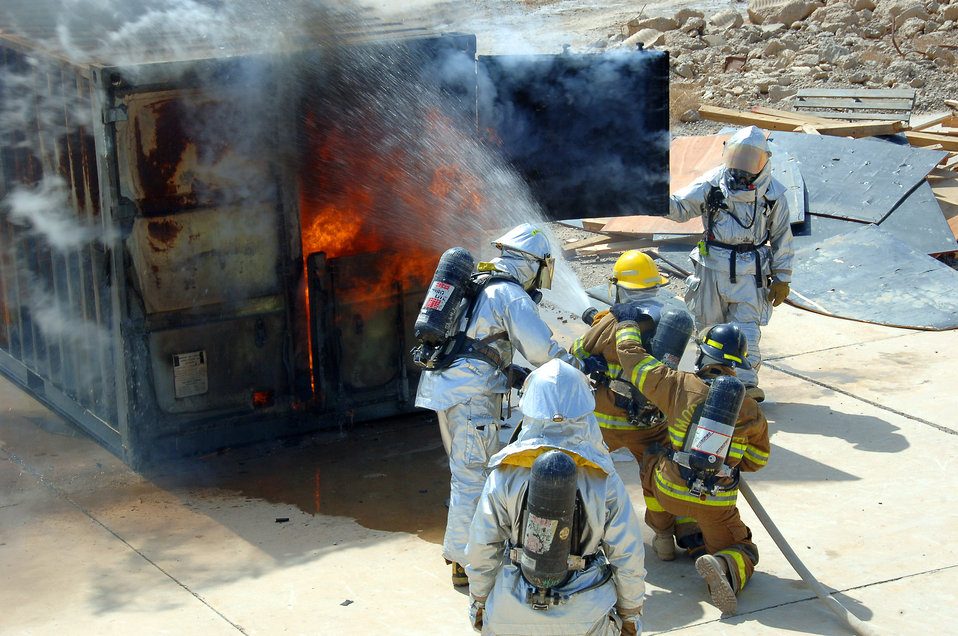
Airmen train Iraqis to save lives

Air Force firefighters from the 407th Expeditionary Civil Engineer Squadron show Iraqi firefighters, in yellow, the proper technique to attack a fire as a team March 3 at Ali Base, Iraq. The Iraqi firefighters attended six, three-block courses to teach them the basics of firefighting.